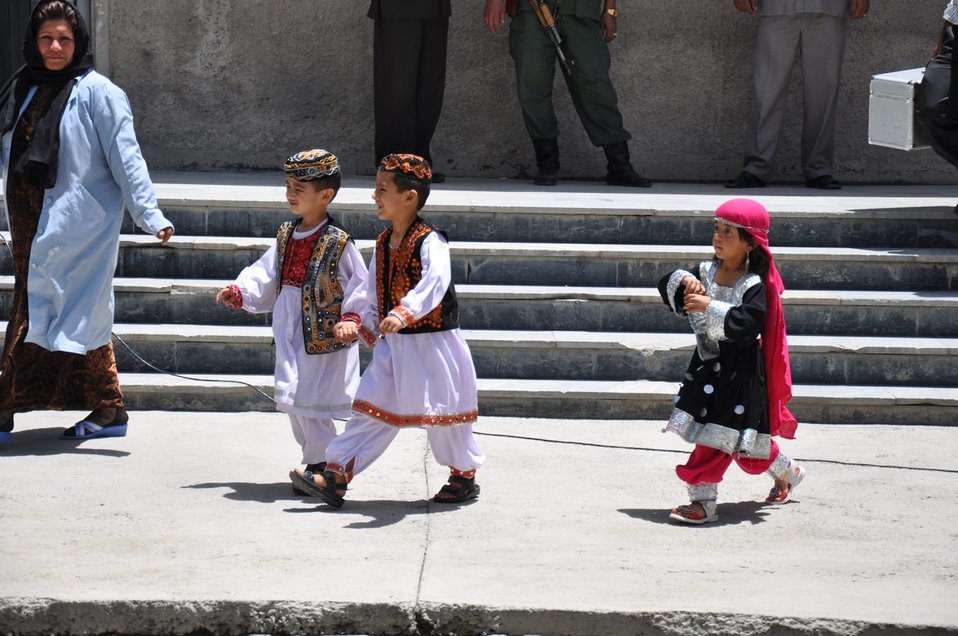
Mother's Day in Afghanistan

The kids dressed up in traditional clothes for the event.